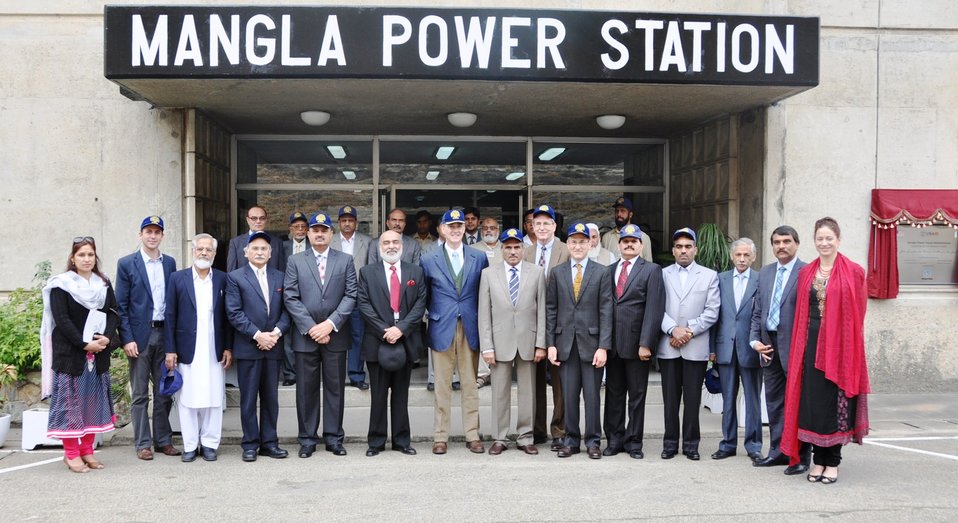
Group photo at the Power Station